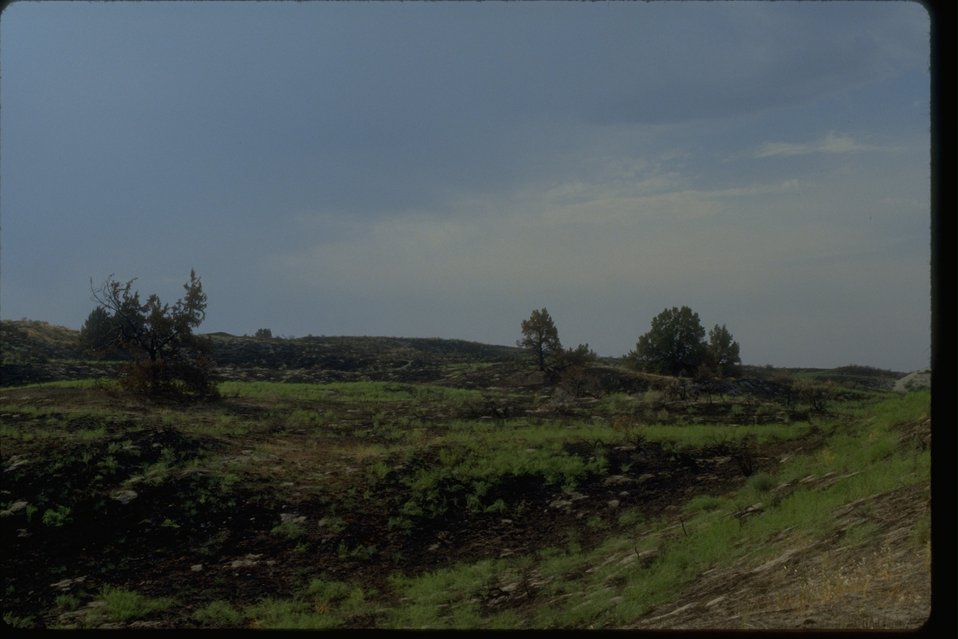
Vegetation comes back after fire in Juniper Dunes Wilderness